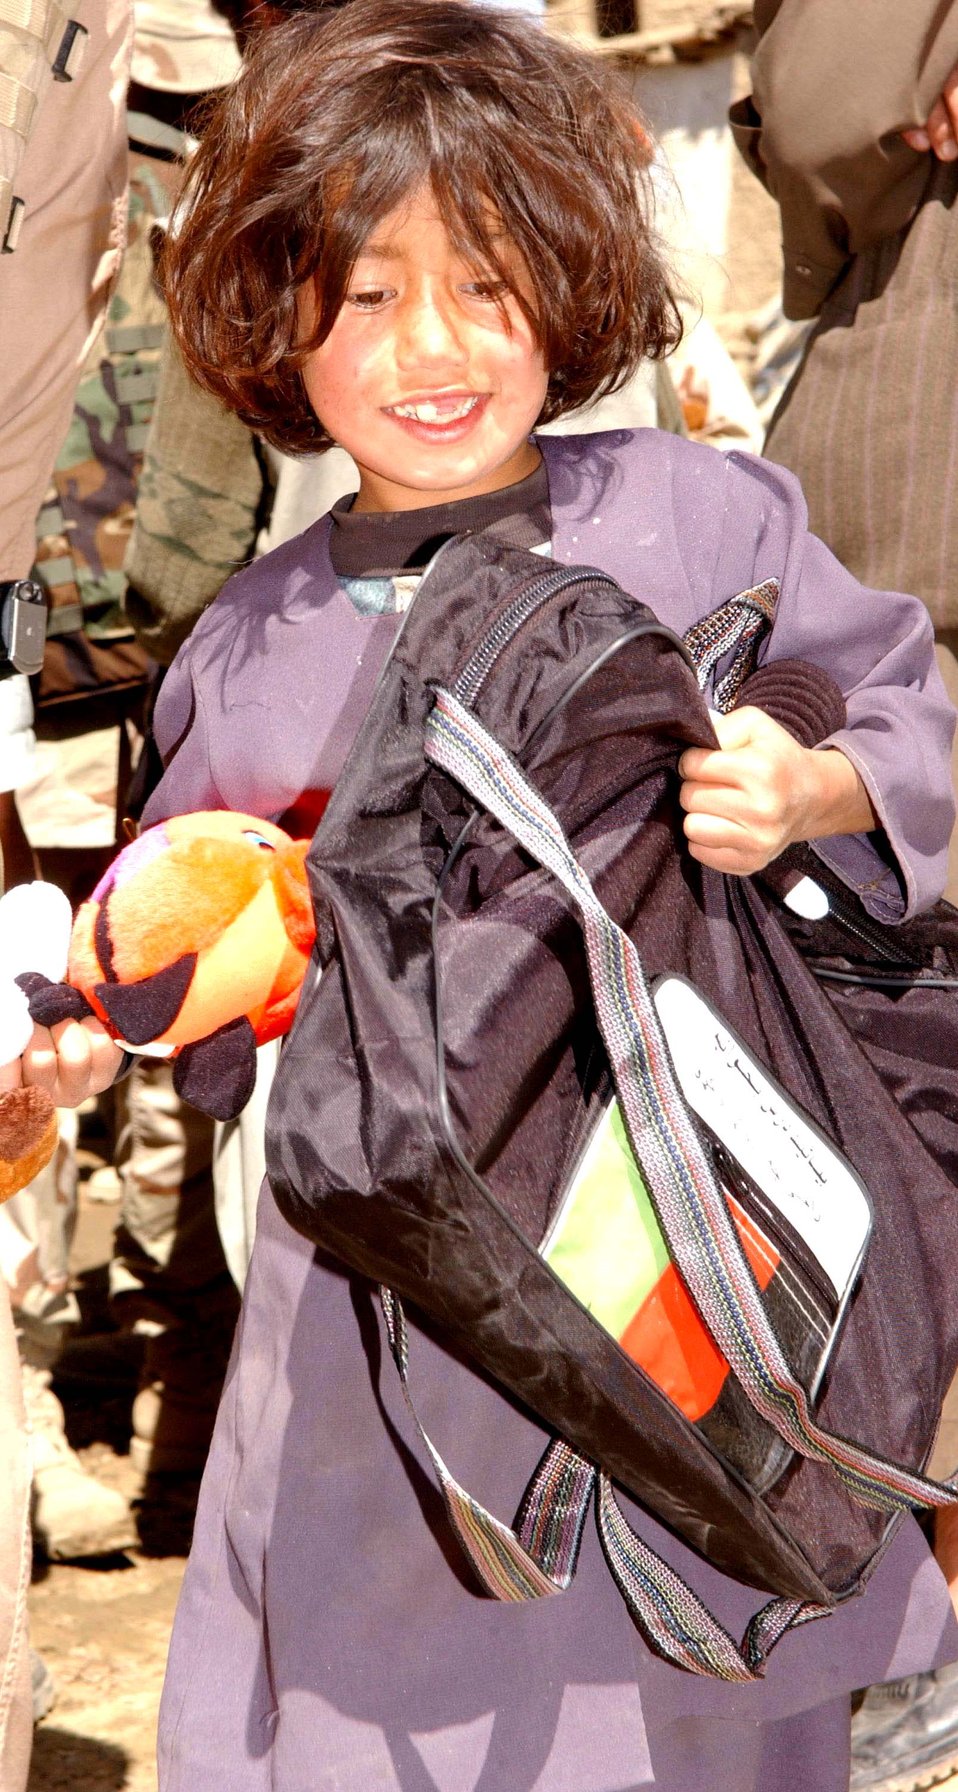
Airmen adopt-a-village or two

JA FARKEL, Afghanistan - An Afghan girl walks away with a bag filled with school supplies and a stuffed animal Airmen gave her during an Adopt-A-Village visit. The Airmen are from the 455th Air Expeditionary Wing at nearby Bagram Air Base.